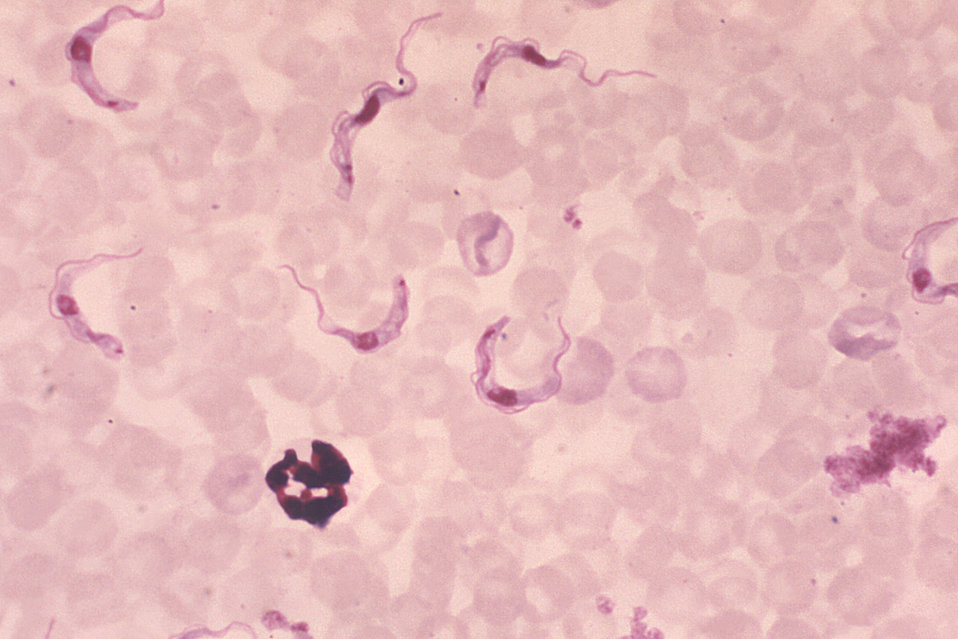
Magnified 1000X, this Giemsa-stained light photomicrograph revealed the presence of Trypanosoma brucei parasites, which were found in a thin film blood smear. Humans are the main reservoir for Trypanosoma brucei gambiense, but this species can also be found in animals. Wild game animals are the main reservoir of T. b. rhodesiense.Geographic Distribution: